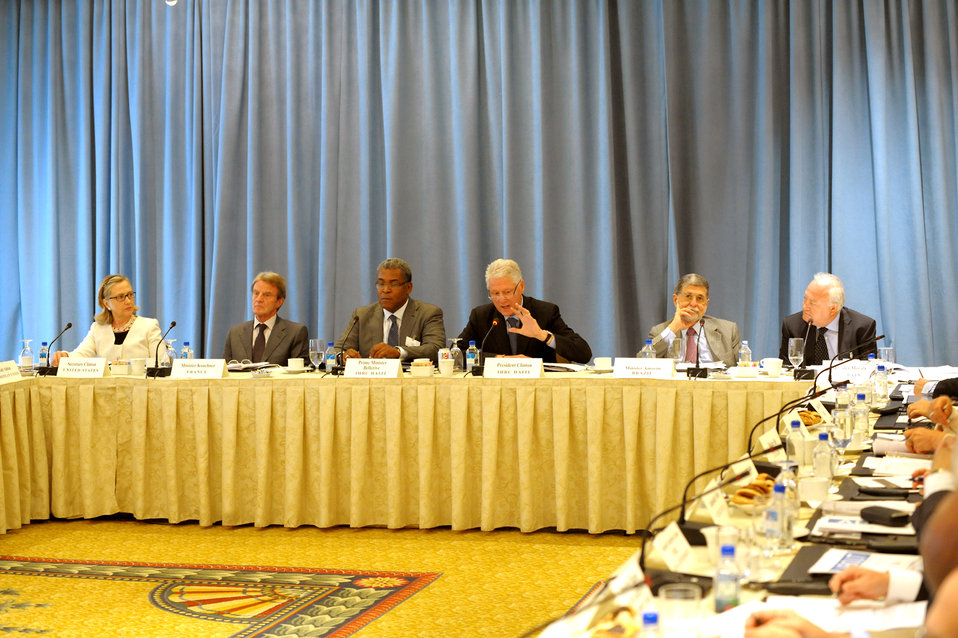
Secretary Clinton, French Foreign Minister Kouchner, Haitian Prime Minister Bellerive, and Former President Clinton Participate in a Special Session of the Interim Haiti Reovery Mission

U.S. Secretary of State Hillary Rodham Clinton (far left), French Foreign Minister Bernard Kouchner (second from left), Haitian Prime Minister Jean-Max Bellerive (third from left), Former President William J. Clinton (fourth from left), and others participate in a special session of the Interim Haiti Recovery Commission. The Commission was co-chaired by Haitian Prime Minister Jean-Max Bellerive and former President William J. Clinton in the Astor Room at the InterContinental hotel in New York, New York, on September 20, 2010.